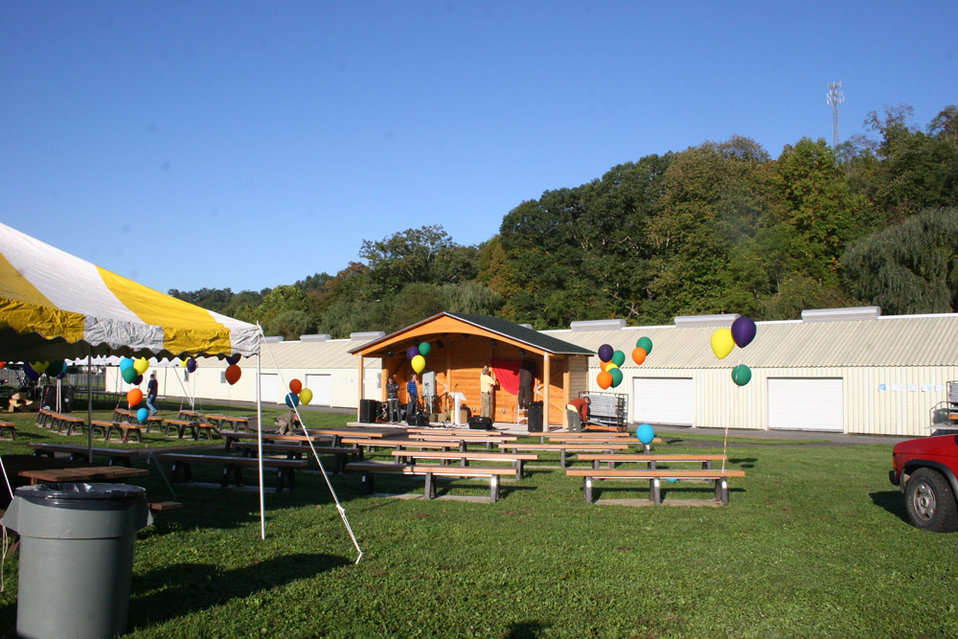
Freshwater Folk Festival (4)